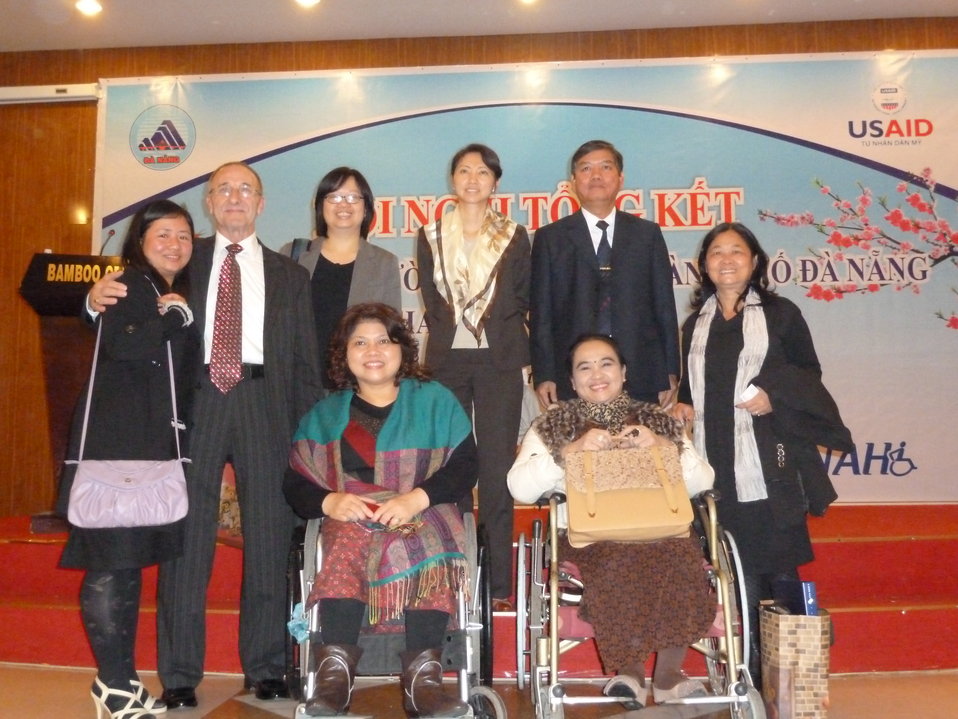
Danang Disability Workshop

Close out workshop of three-year USAID program in disabilities, Danang